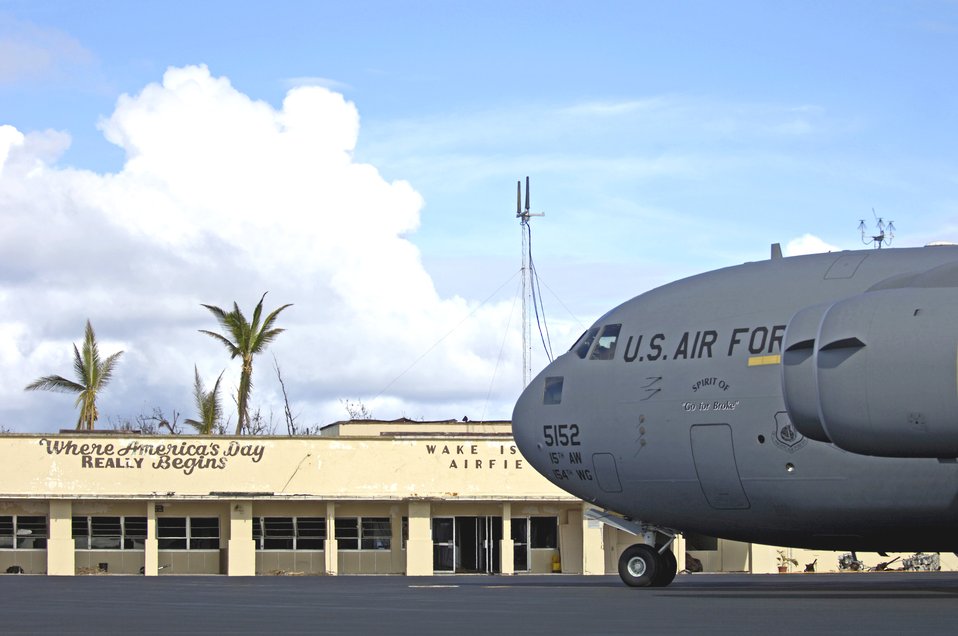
Teams fly to Wake Island to assess damage

A C-17 Globemaster III sits in front of the airfield operations building on Wake Island Sept. 12. The C-17, from the 535th Airlift Squadron at Hickam Air Force Base, Hawaii, flew a 53-person team to the island to assess damage left by Super Typhoon Ioke after it hit the island Aug. 31.